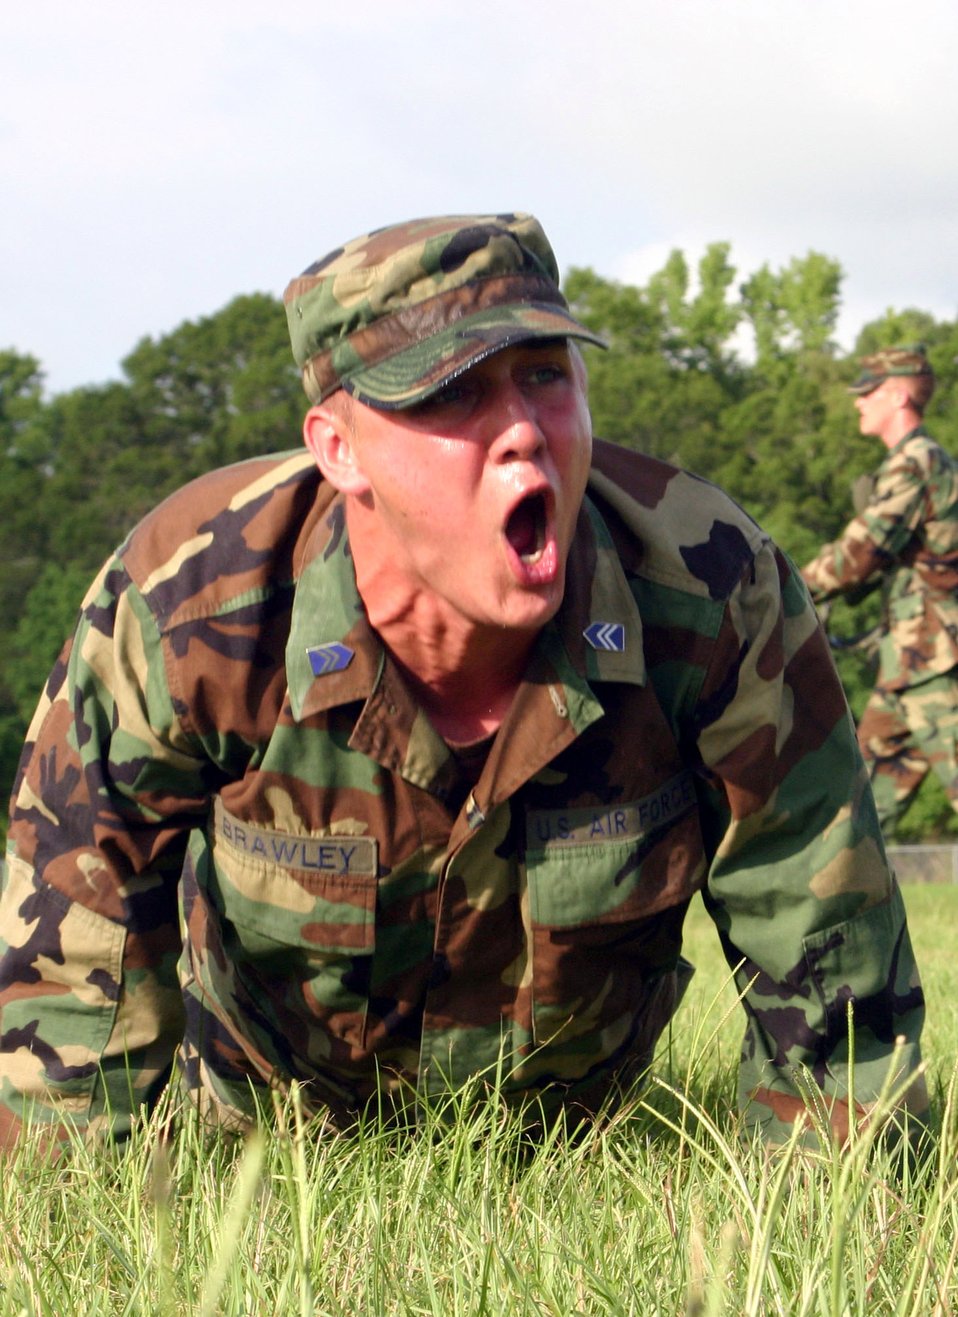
ROTC cadets complete 'Props and Wings Challenge'

ROTC Cadet Gavin Brawley encourages fellow cadets while pushing out another pushup July 17 during the physical fitness test portion of the Props and Wings Challenge at Maxwell Air Force Base, Ala. The challenge tested more than 330 cadets with mental and physical activities during the 27-day field training event.